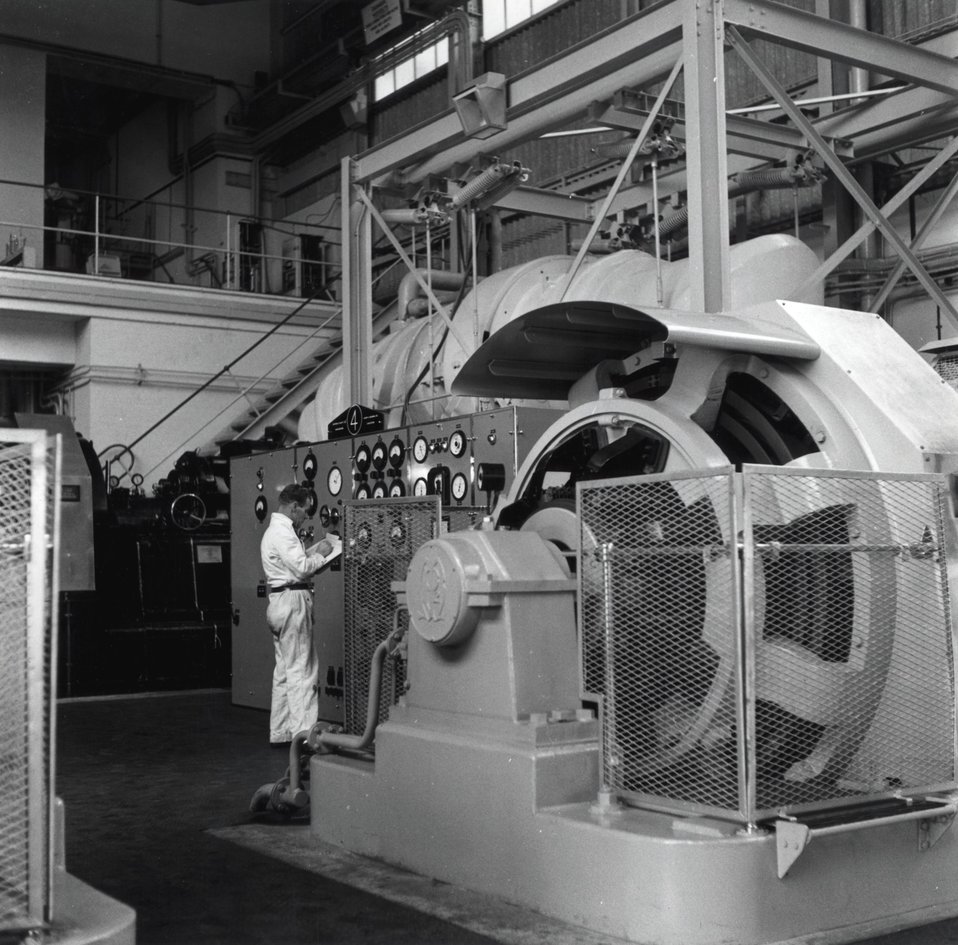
Britain's First Atomic Power Station, Calder Hall. The D.C. generator of the Ward-Leonard set used in the variable speed drive of the CO2 blowers of No. 1 Reactor, Calder Hall A power station. c. 1956